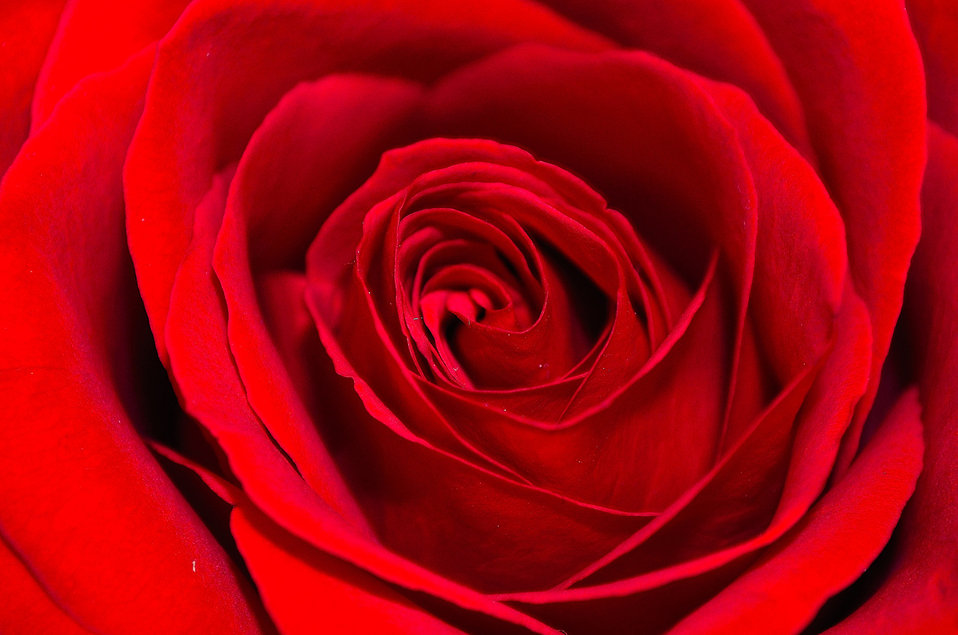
Red rose - background.